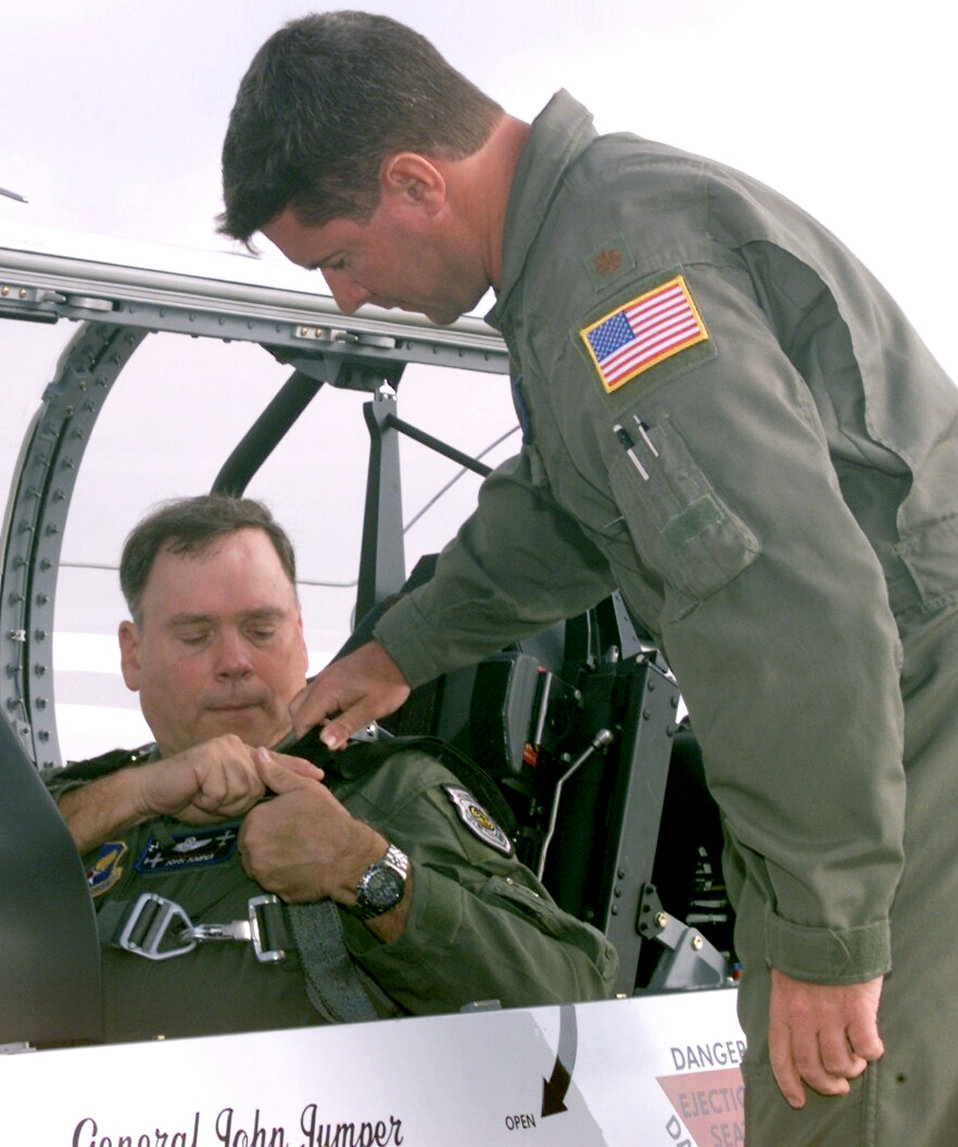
Strapped in

RANDOLPH AIR FORCE BASE, Texas -- Maj. John McCauley from the 559th Flying Training Squadron, helps strap Gen. John P. Jumper, Air Force chief of staff, into the cockpit of a T-6 here. Jumper took an orientation flight in the Air Force's newest trainer and later held a